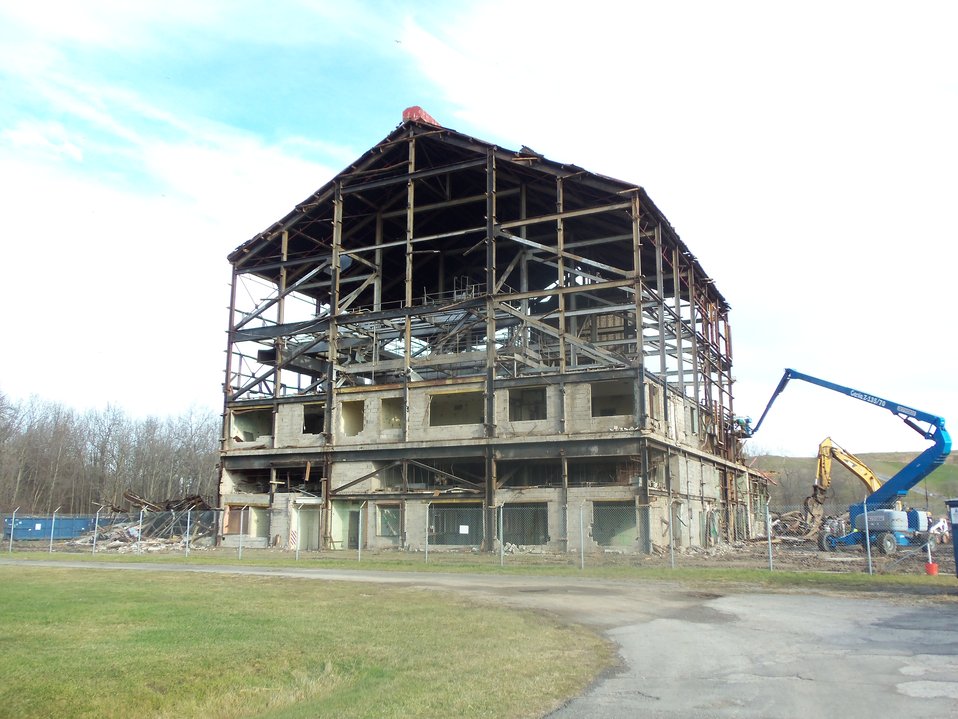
Building 401 deconstruction of shell.
Activities from the Niagara Falls Storage Site, which is associated with the former Lake Ontario Ordnance Works. Formerly Utilized Sites Remedial Action Program (FUSRAP), a program initiated in 1974 to identify, investigate and clean up or control sites that were part of the Nation's early atomic energy and weapons program. Activities at the sites that are eligible for FUSRAP were conducted by Manhattan Engineer District (MED) or the Atomic Energy Commission (AEC), both predecessors of the Department of Energy (DOE). The U.S. Army Corps of Engineers was assigned management of FUSRAP by Congress in 1997.